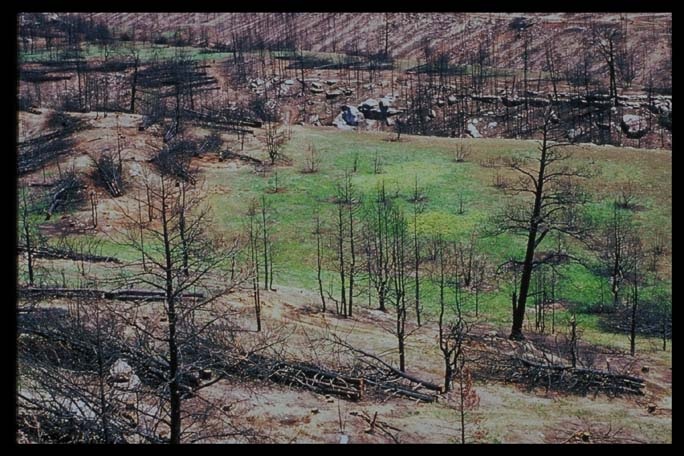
Burned area